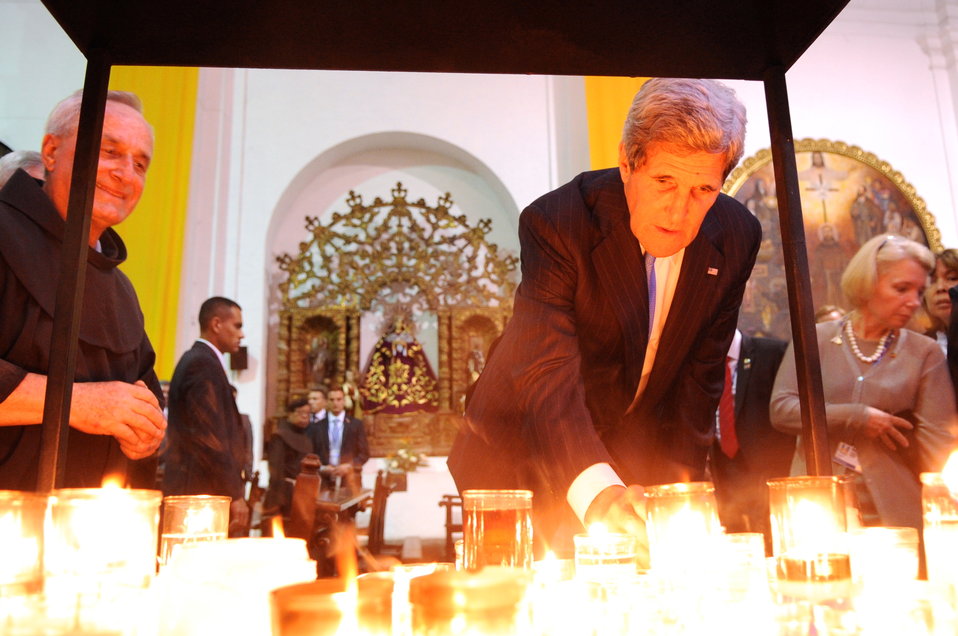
Secretary Kerry Lights a Prayer Candle

U.S. Secretary of State John Kerry lights a prayer candle after touring the San Francisco Church in Antigua, Guatemala, on June 4, 2013.